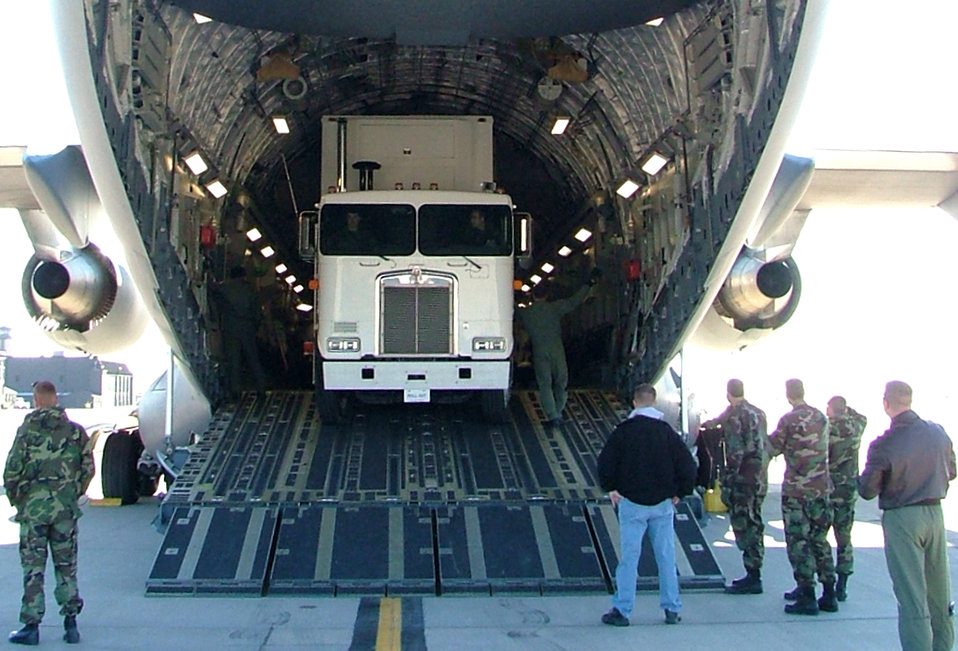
GM-3 vehicle deploys aboard C-17 first time

The 4th Space Operations Squadron's Mobile Operations Flight loads the Ground Mobile-3 vehicle into a C-17 Globemaster III Nov. 25 at Peterson Air Force Base, Colo. The GM-3 and a team of 4th SOPS Airmen from Schriever AFB, Colo., will provide secure communication effects from their deployed location at Andersen AFB, Guam.